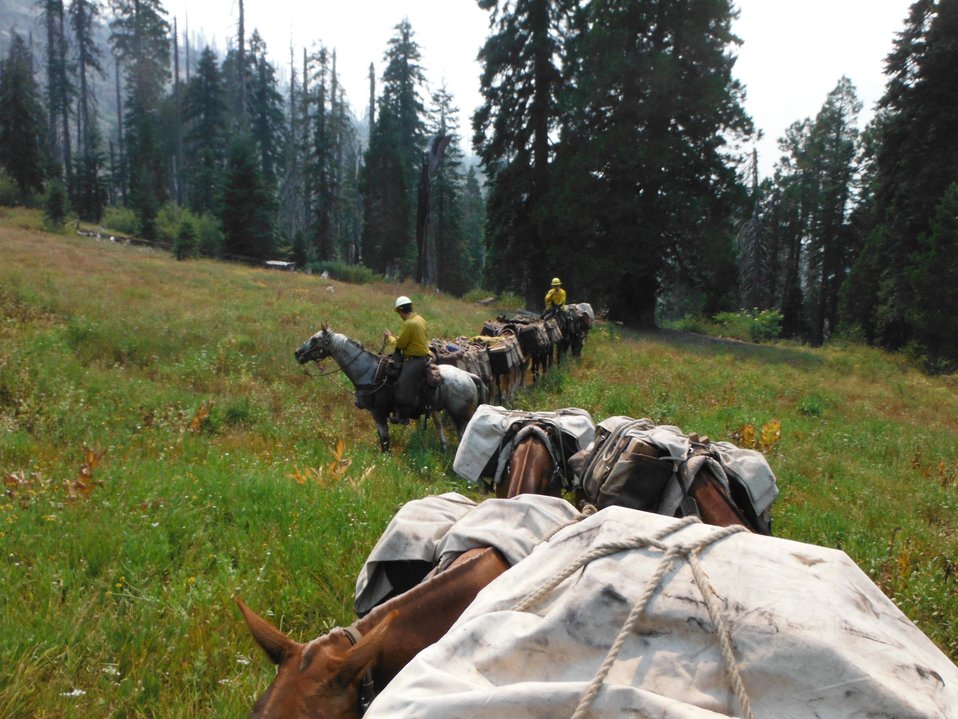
U.S. Forest Service packhorses and mules aid in the support of firefighters at the Corral Complex Fire. The Corral Complex Fire in the Six Rivers National Forest near the Trinity Alps Wilderness area in California began on Aug. 10, 2013 by lightning and has consumed approximately 12,272 acres and is 67% contained.